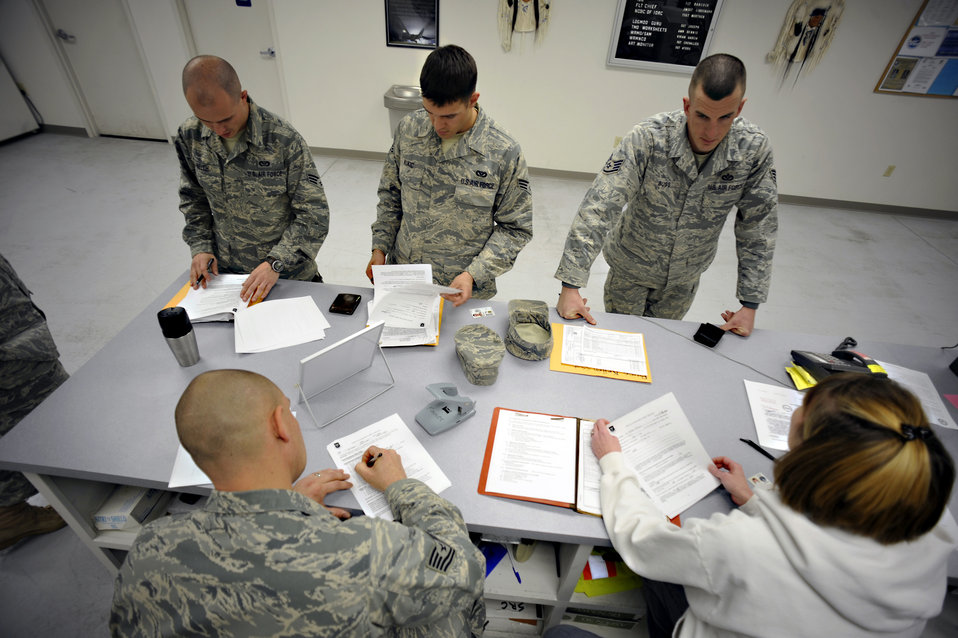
Holloman prepares to support Operation United Response

Airmen from the 49th Logistics Readiness Squadron look at mobility folders belonging to Airmen from the 49th Materiel Maintenance Group Jan. 17, 2010, at Holloman Air Force Base, N.M., to ensure they are prepared to deploy to Haiti in support of Operation United Response. The base is preparing tents, generators, air conditioning units, reverse osmosis water purification units, or ROWPUs, and personnel to send to that country after it was rocked by a magnitude 7 earthquake Jan. 12 leaving thousands dead and even more homeless.